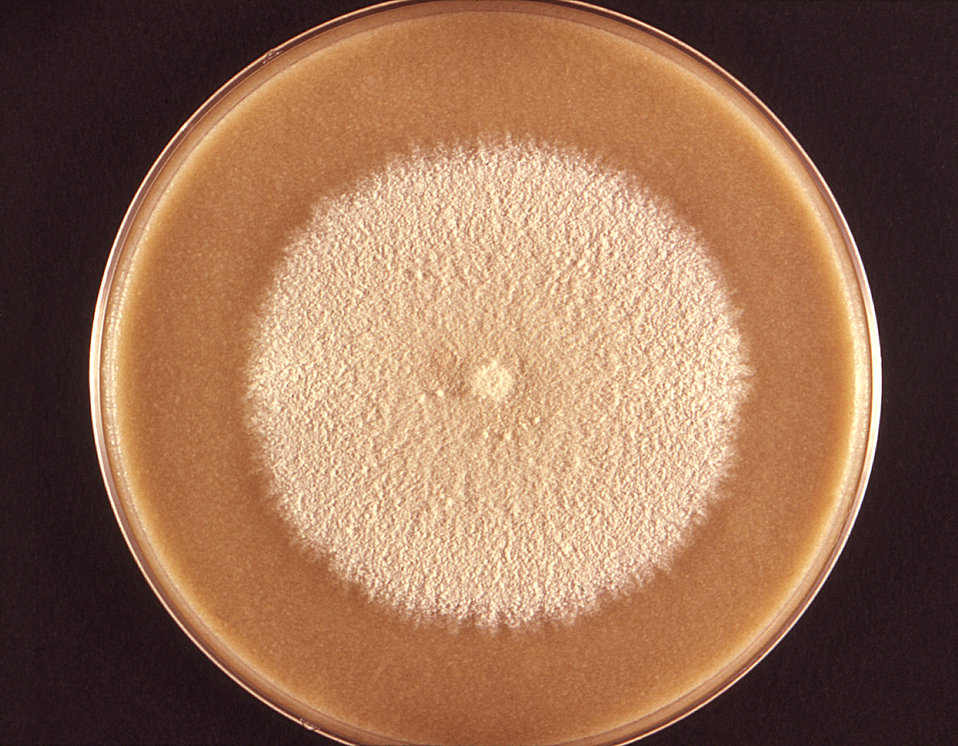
Photographed from the front, this image depicted a Petri dish containing cereal agar, upon which a Microsporum persicolor fungal colony had been cultured. As was the case here, the colonies can be white, or depending upon the Microsporum sp., may run the gamut, sporting a yellow, beige or cinnamon color, and display a flat, or glabrous, woolly or powdery texture. Taxonomically, M. persicolor is a member of the phylum Ascomycota.